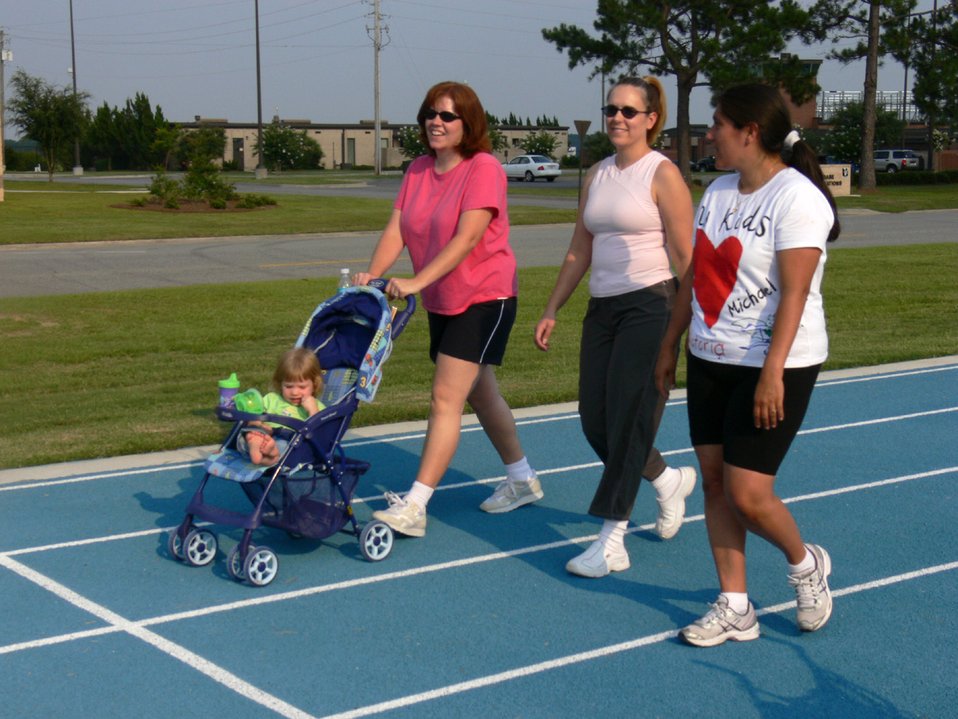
Spouses, families of deployed Airmen go the distance

Ginger Smith and her daughter Ainsley, Michelle Palmer and Angelina Knight share their day's stories as they walk around the track at Moody Air Force Base, Ga., on Friday, June 30. They are walking as part of the Inching Toward Iraq program, which focuses the families on walking the distance it would take them to re-unite with their loved ones to help cope with the stress of deployments. Their husbands are deployed with the 823rd Security Forces Squadron.